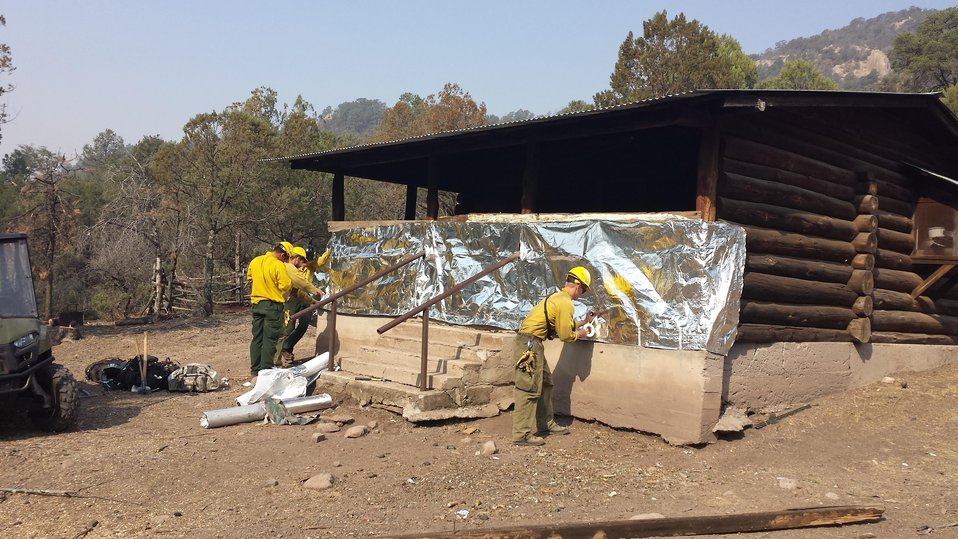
cabin wrap

Forest Service firefighters wrap a cabin in Aluminized Structure Wrap to protect the building from radiant heat and burning embers from the Silver Fire on the Gila National Forest in 2012. Wrapping a structure is the best protection strategy when it's too dangerous to stay.